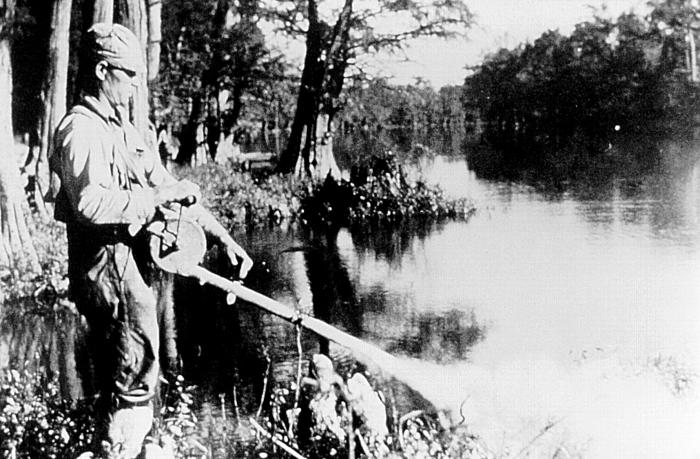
In 1958, The National Malaria Eradication Program used an entirely new approach implementing DDT for spraying of mosquitoes.